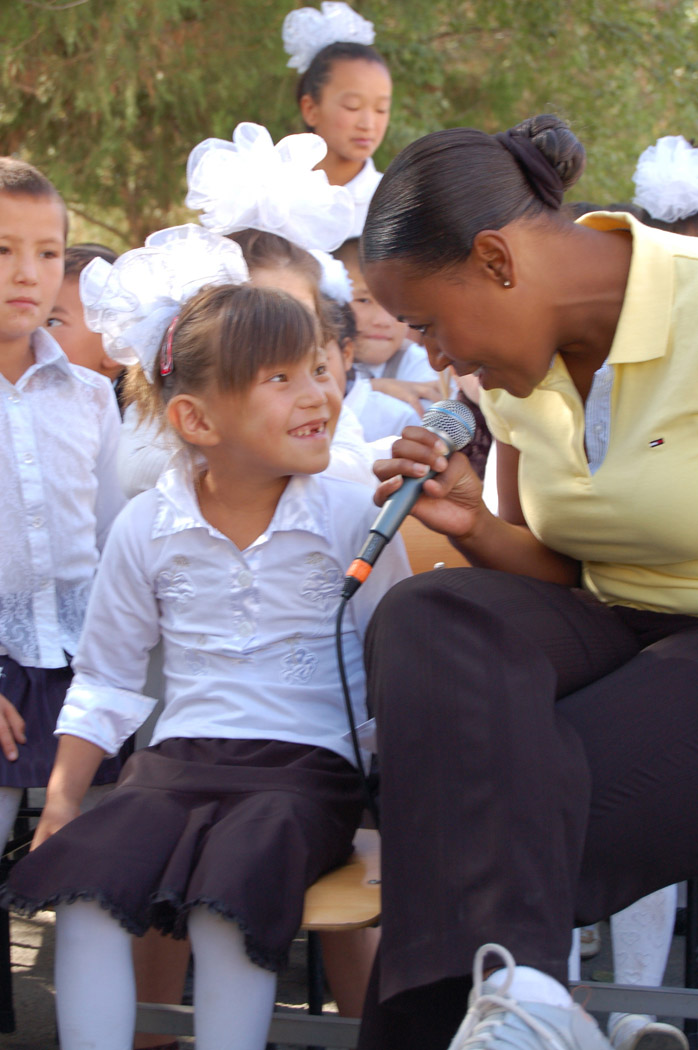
Band members, Kyrgyz citizens share culture through music

Master Sgt. Regina Coonrod sings to a girl during a Sept. 9 visit to a boarding school at Nizhanchuisk, Krygyzstan. The U.S. Air Force central Band Yuma performed there during their eight-day tour where they played at six schools, villages and orphanages and four concerts on base.